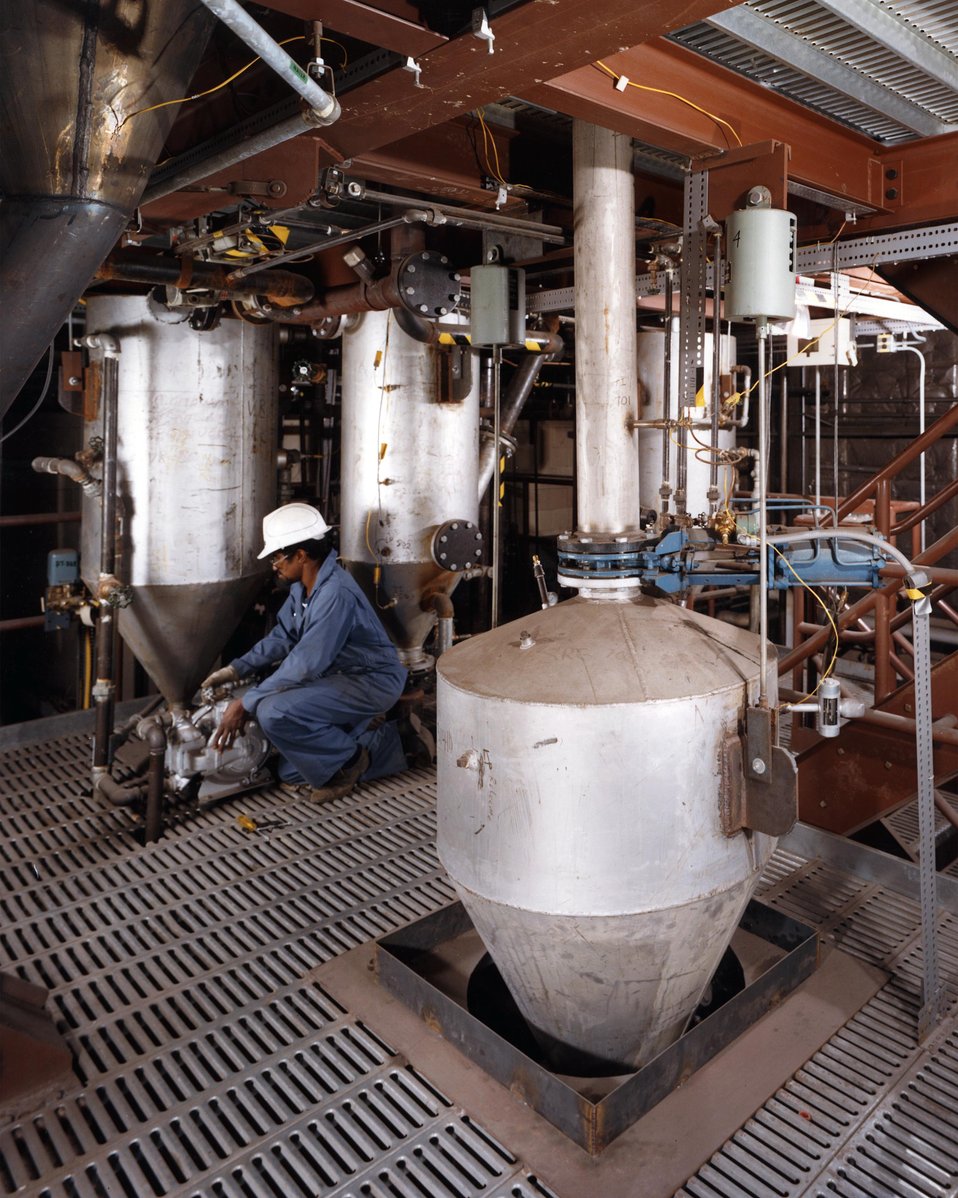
WORKER CHECKS LIQUID RECEIVERS ON THE FIRST LEVEL OF GASIFICATION UNIT, CYCLONE SOLIDS RECEIVER (F).

THE MULTI-SOLID FLUIDIZED-BED GASIFICATION TECHNOLOGY IS A METHOD OF CONVERTING BIOMASS, E.G., WOOD CHIPS, INTO METHANE-RICH GAS THAT COULD BE USED IN PLACE OF NATURAL GAS.THE METHOD USES A CHEMICAL CATALYST IN A REACTOR SYSTEM TO GASIFY BIOMASS. THIS REACTOR IS LESS COMPLEX IN DESIGN THAN A COAL GASIFICATION PROCESS AND ALLOWS THE USE OF SMALLER UNITS.